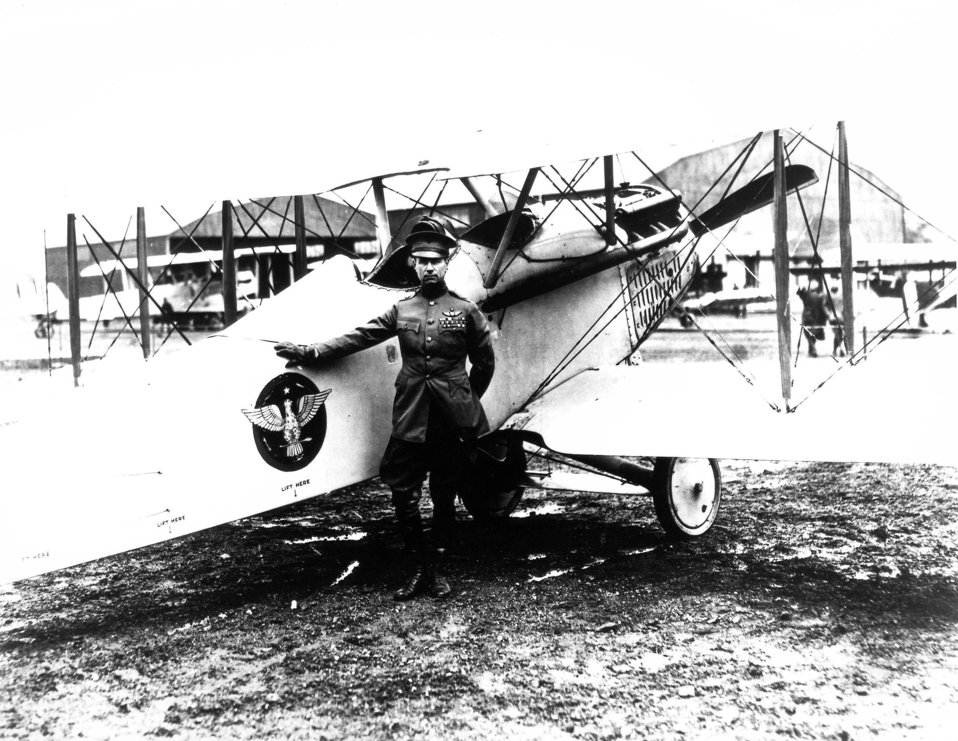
Billy Mitchell and Vought VE-7 Bluebird

Brig. Gen. William